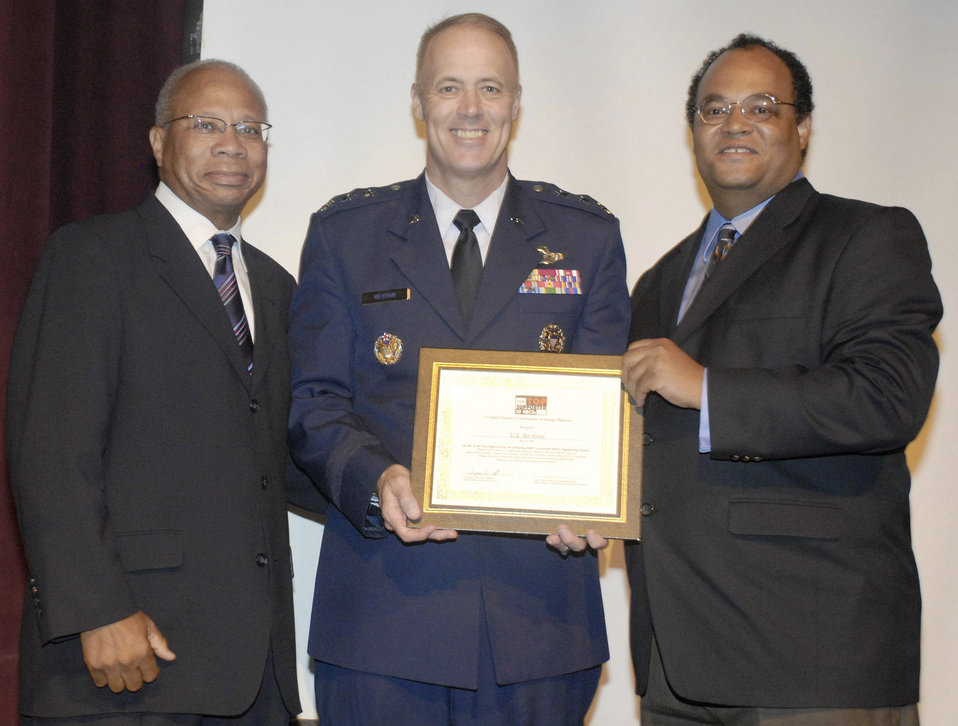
Air Force named among top HBCU supporters

Lt. Gen. Richard Y. Newton III, deputy chief of staff for manpower and personnel, accepts an award on behalf of the Air Force May 29 at Howard University here, from Dean Jim Johnson of Howard University's College of Engineering, Architecture, and Computer Science, and Dr. Tyrone Taborn, CEO of Career Communications Group. The Air Force was recently named among the